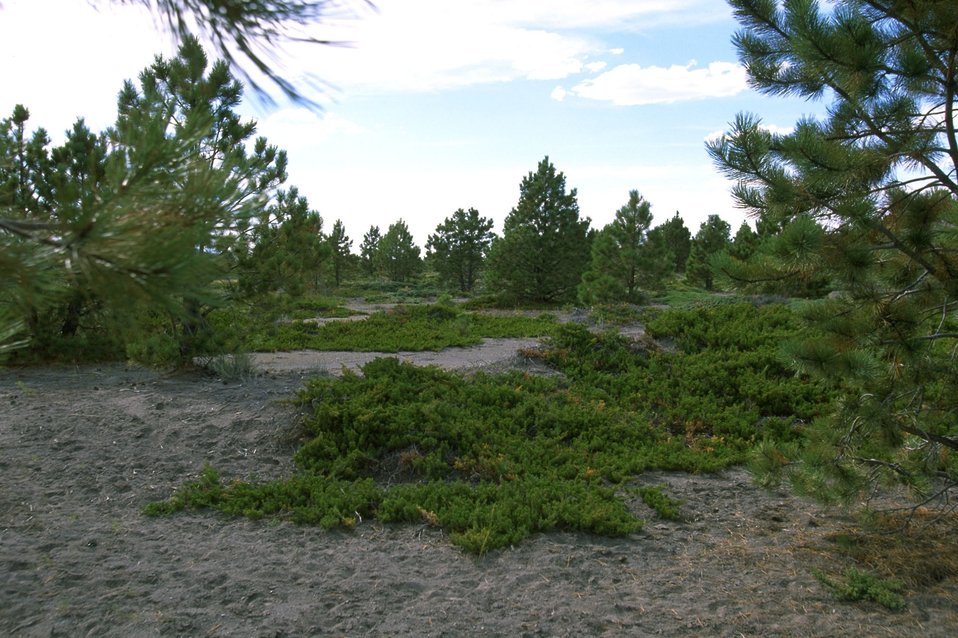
Acid Shale Area of Critical Environmental Concern (ACEC)